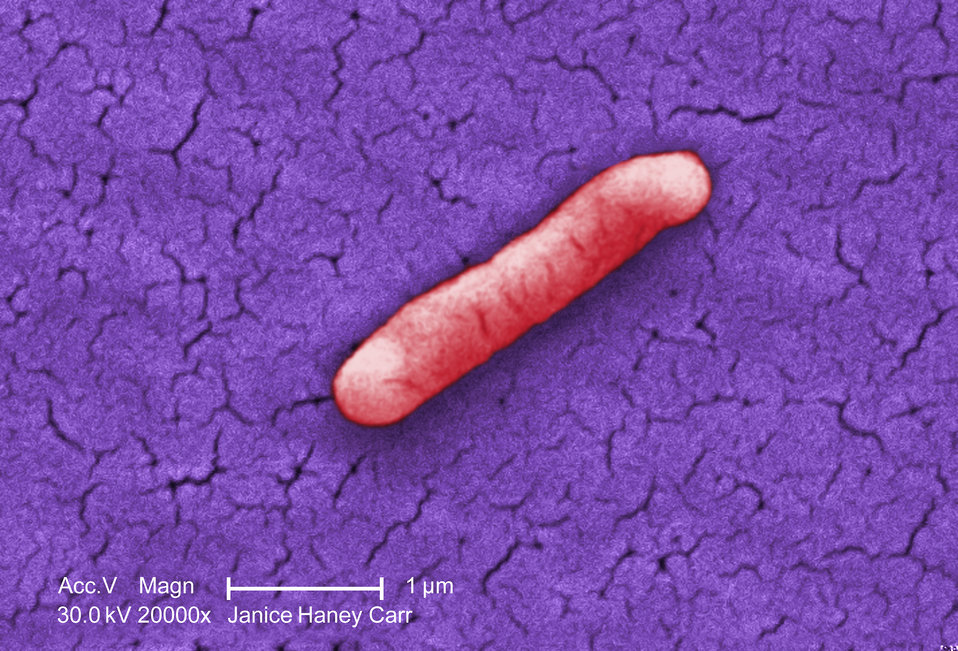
Under a very high magnification of 20000X, this colorized scanning electron micrograph (SEM) revealed the presence of a single Gram-negative Salmonella typhimurium bacterium that had been isolated from a pure culture.